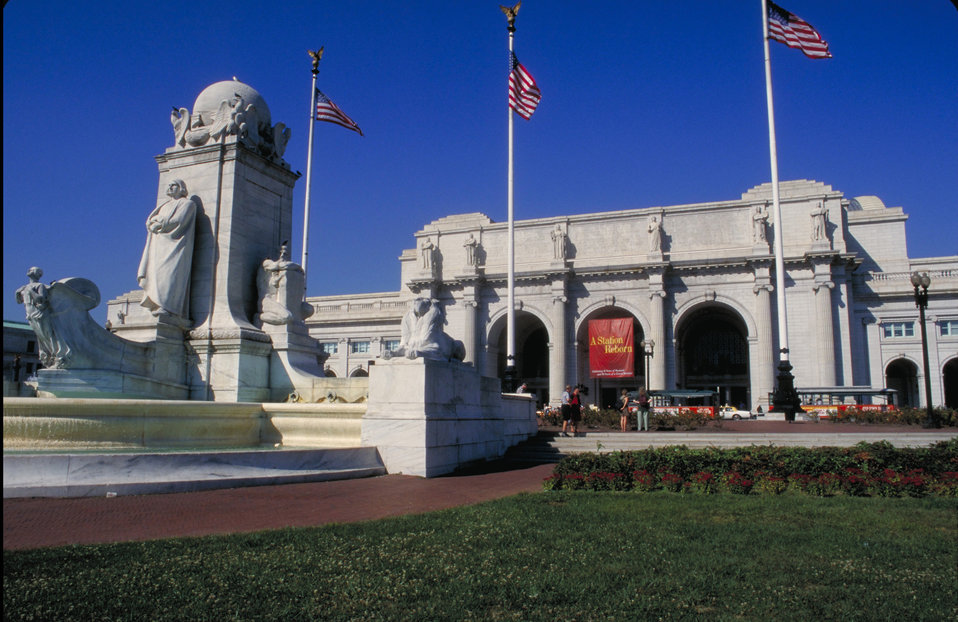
Union Station in Washington, DC.